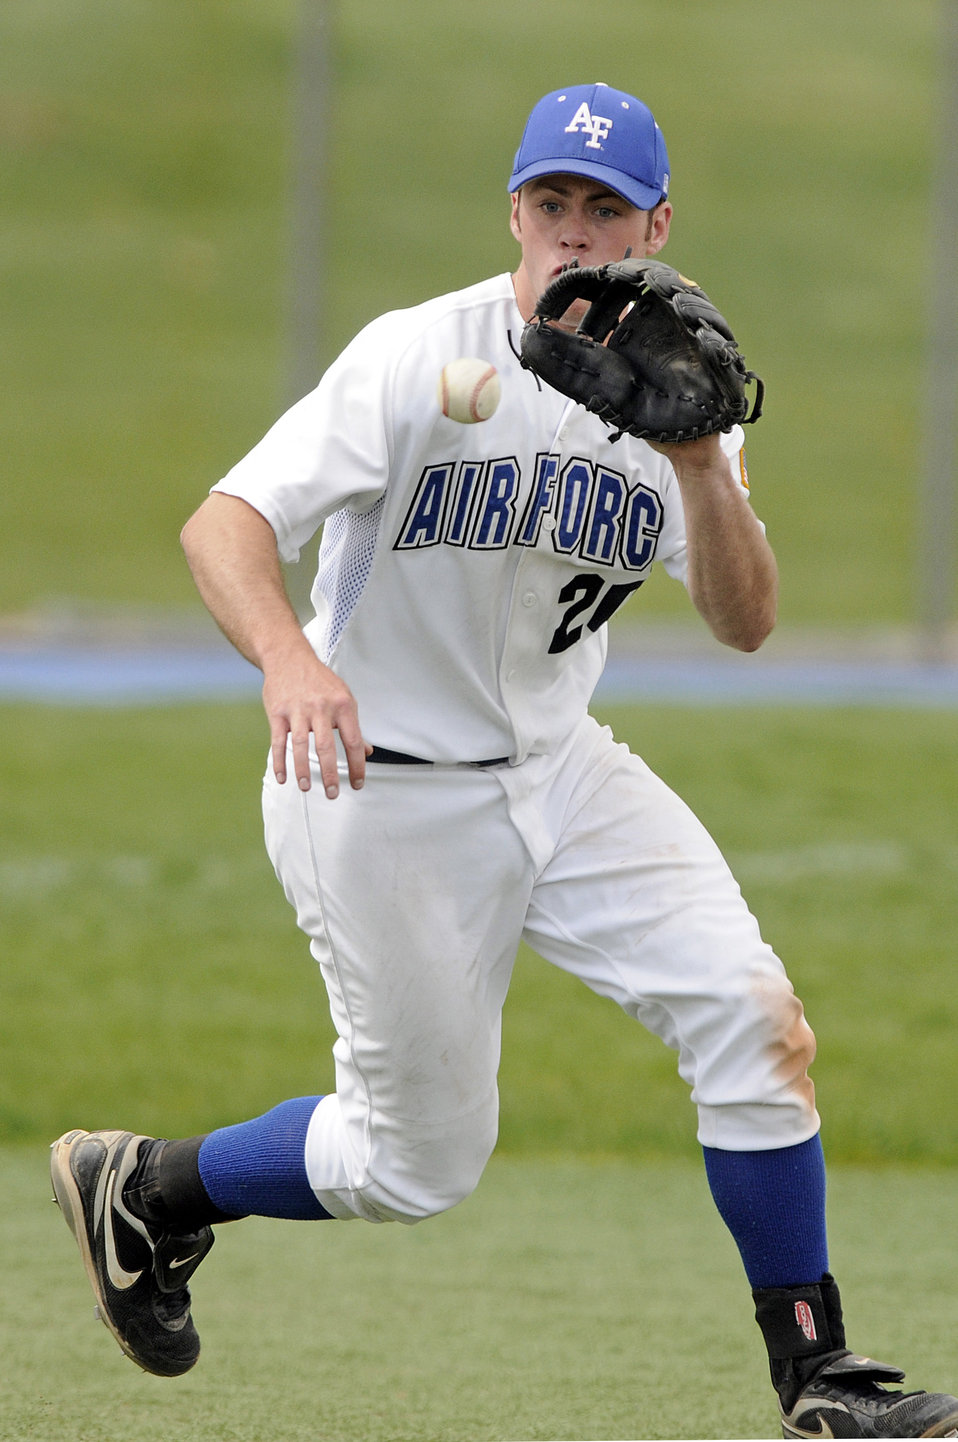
Baseball season ender

Air Force Academy third baseman Jon McMahon charges a high ground ball during a two-game series with the University of New Mexico Lobos at Falcon Field in Colorado. The Falcons lost both games, and finished the season with a 14-37 overall record.